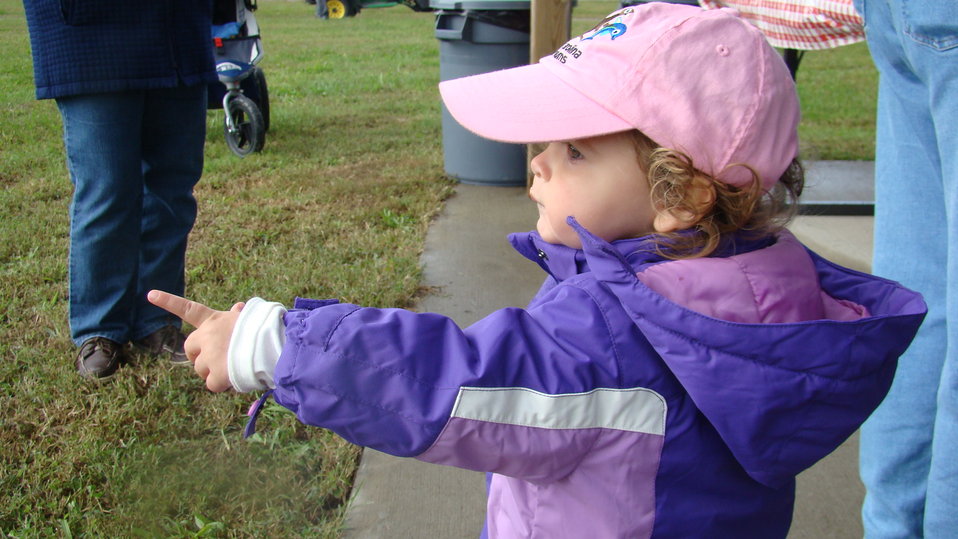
Rappahannock River Valley NWR 15th Anniversary

Young visitors enjoyed the variety of exhibits.